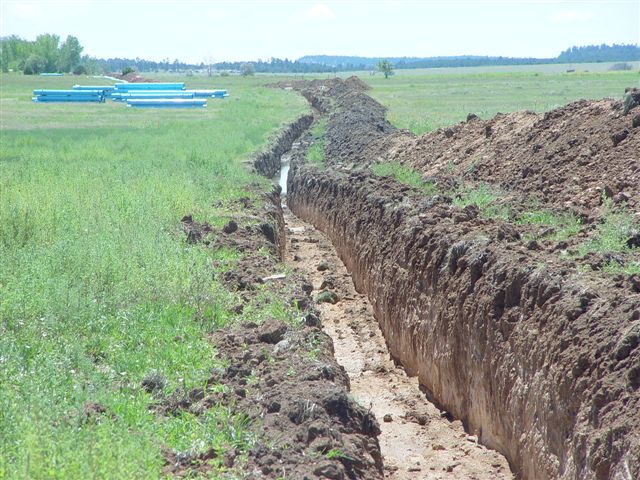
Las Vegas 2

A newly-dug ditch created by the Deerfield Corp. of Albuquerque, N.M. awaits the placement of new PVC pipes as part of Recovery Act project to rehabilitate a nine-mile water delivery and pipeline system at Las Vegas National Wildlife Refuge in Las Vegas, N.M. The system supplies water to essential migratory bird habitat.